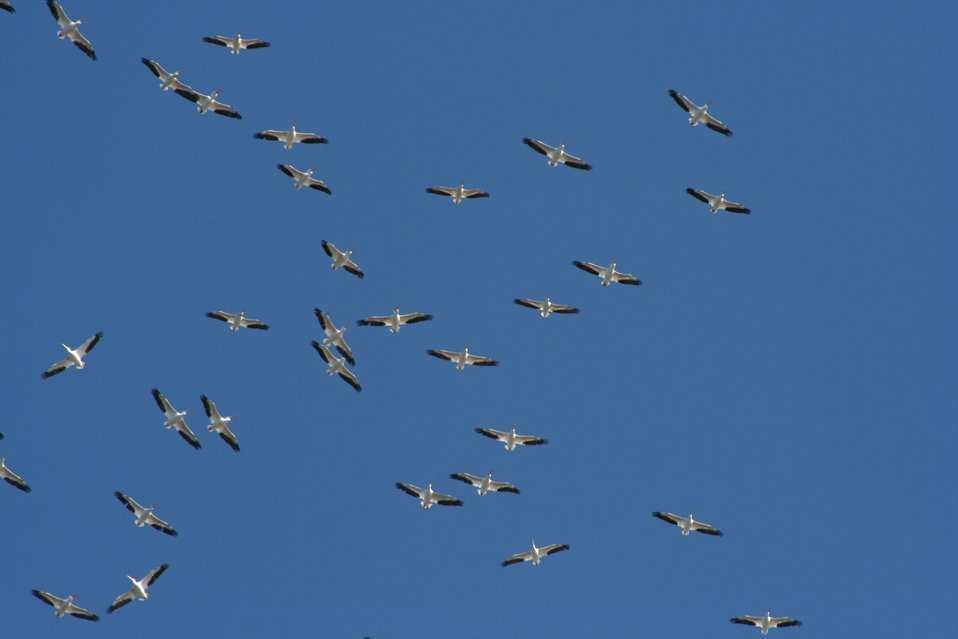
PelicansMigrating

Pelicans migrating near Keokuk, Iowa.